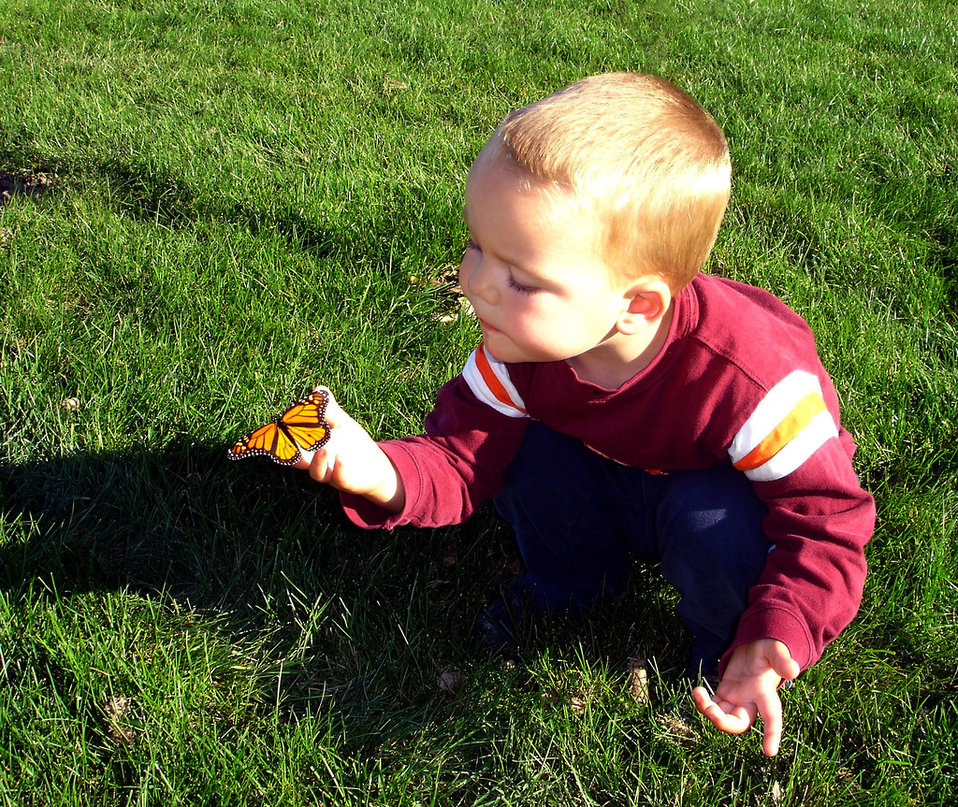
3 yr old with Monarch

Uploaded for Flickr member agdubbs.

This newly morphed monarch butterfly perched on my 3 year old son's hand for a long time on a sunny day in October 2007 in Fort Wayne, IN. Our organically-maintained yard and native gardens promote a perfect discovery and learning environmental right outside the back door.